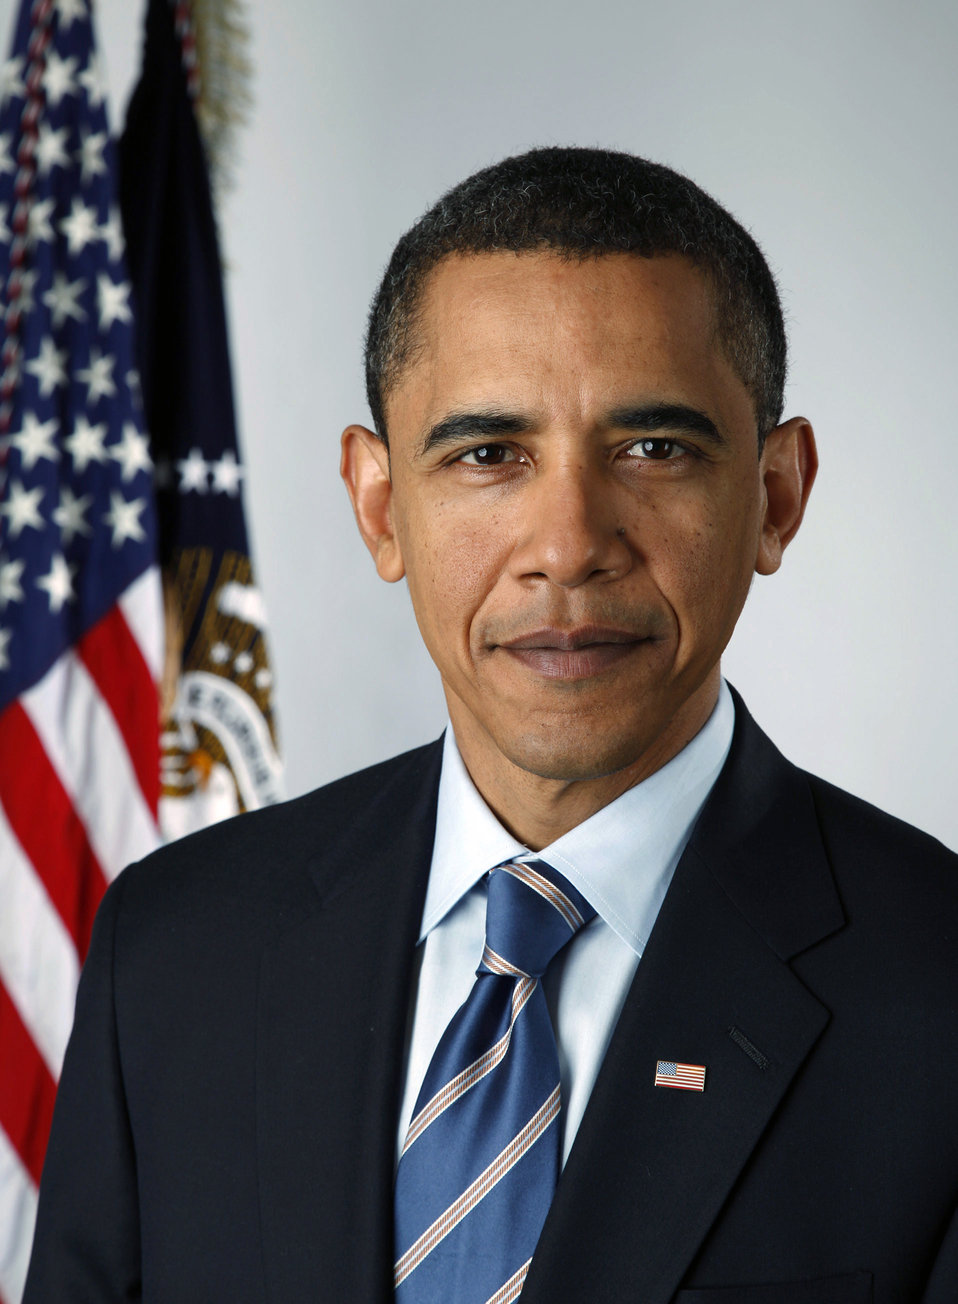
President Barack Obama

The official portrait of President Barack Obama has been released by the White House. He is the 44th president of the United States and took office Jan. 20 in Washington, D.C.